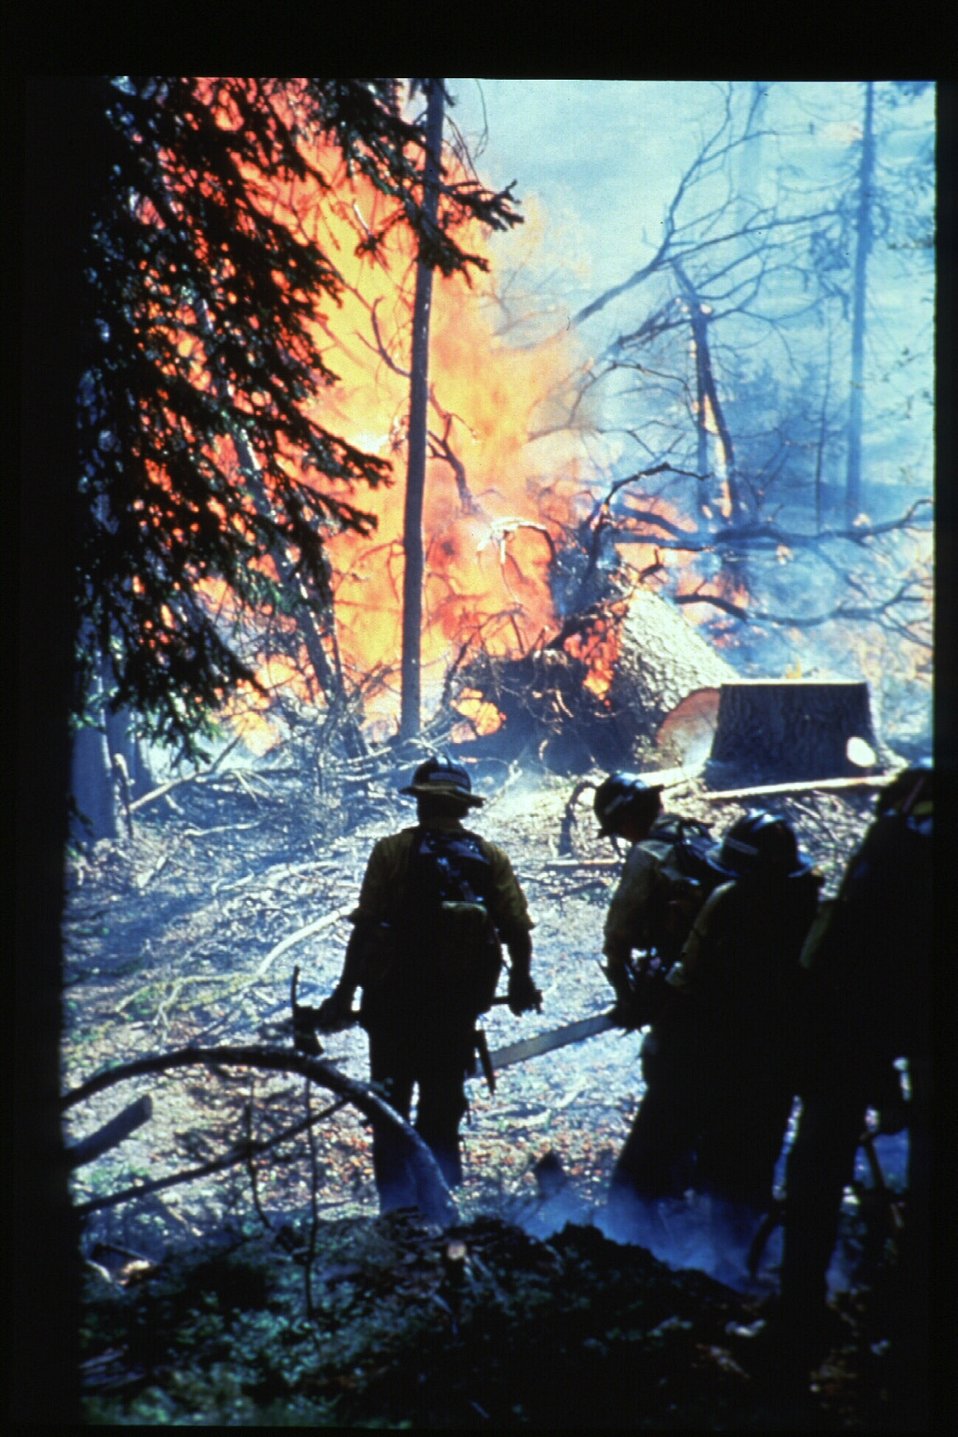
Boise Foothills Fire Danskin Mountains and South Fork of Boise River Wild Fire Fighters Four River Field Office LSRD Lower Snake River District